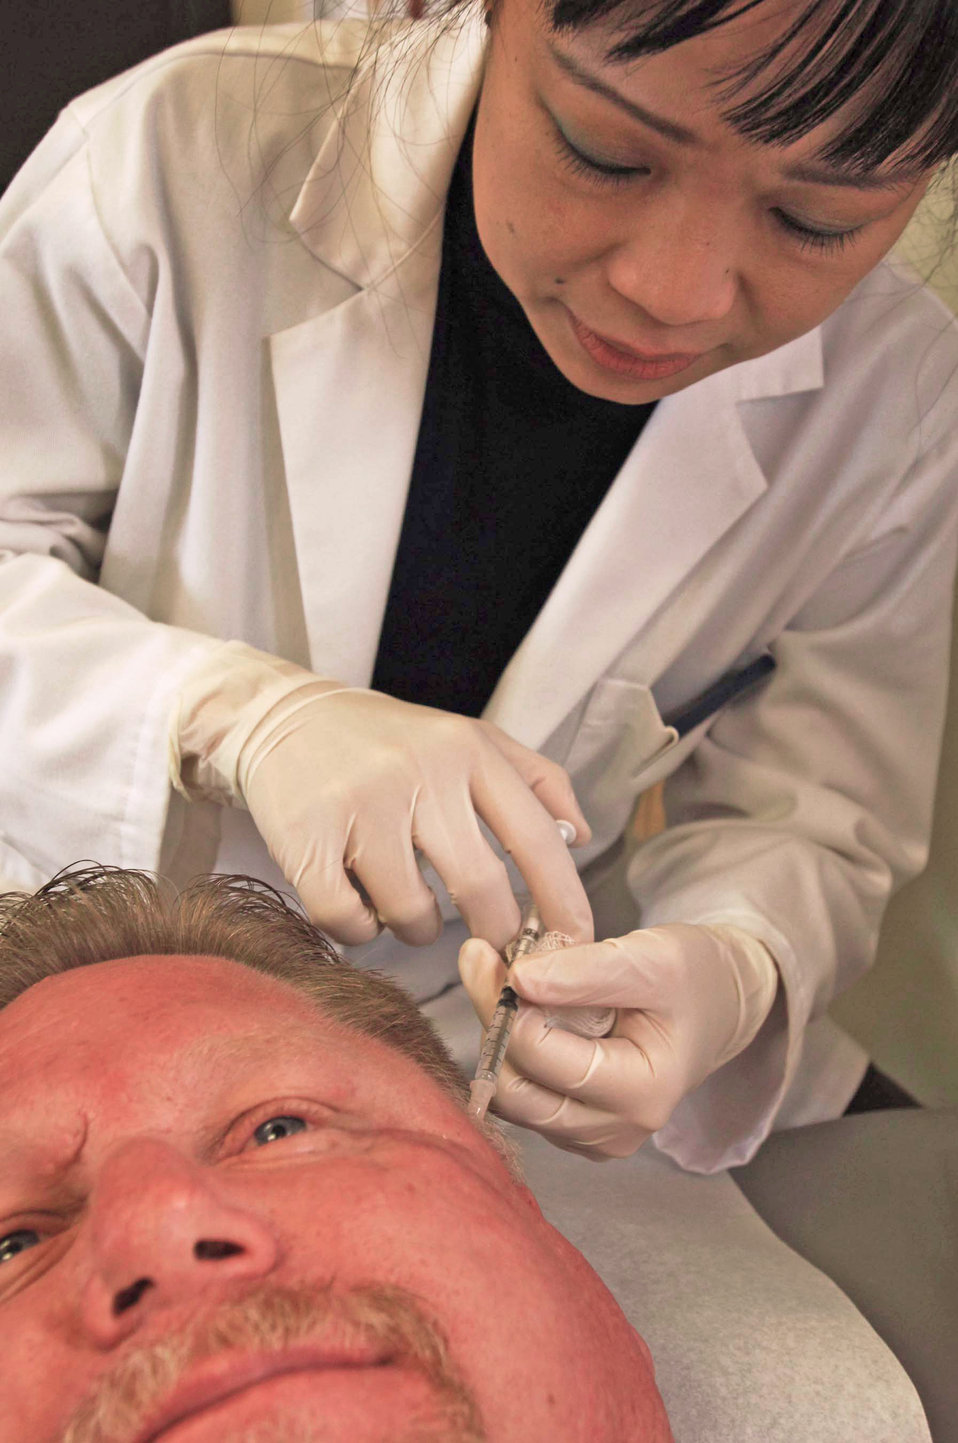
Air Force doctor studies new medication for traumatic brain injurty patients

Maj. (Dr.) Maria Alvarez injects Robert O'Reilly with botulinum toxin Sept. 9, 2009, at Lackland Air Force Base, Texas. Doctor Alvarez, a Wilford Hall neurologist, is leading a case study to improve treatment of tramatic brain injury patients with chronic headaches.